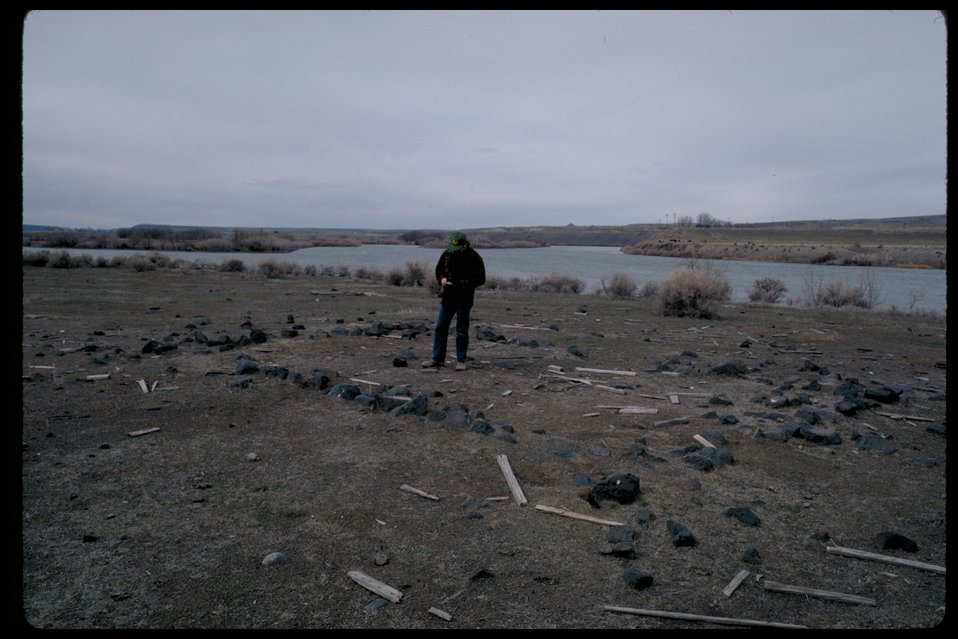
Stout Homestead in the Narrows Oregon Trail Lower Snake River District